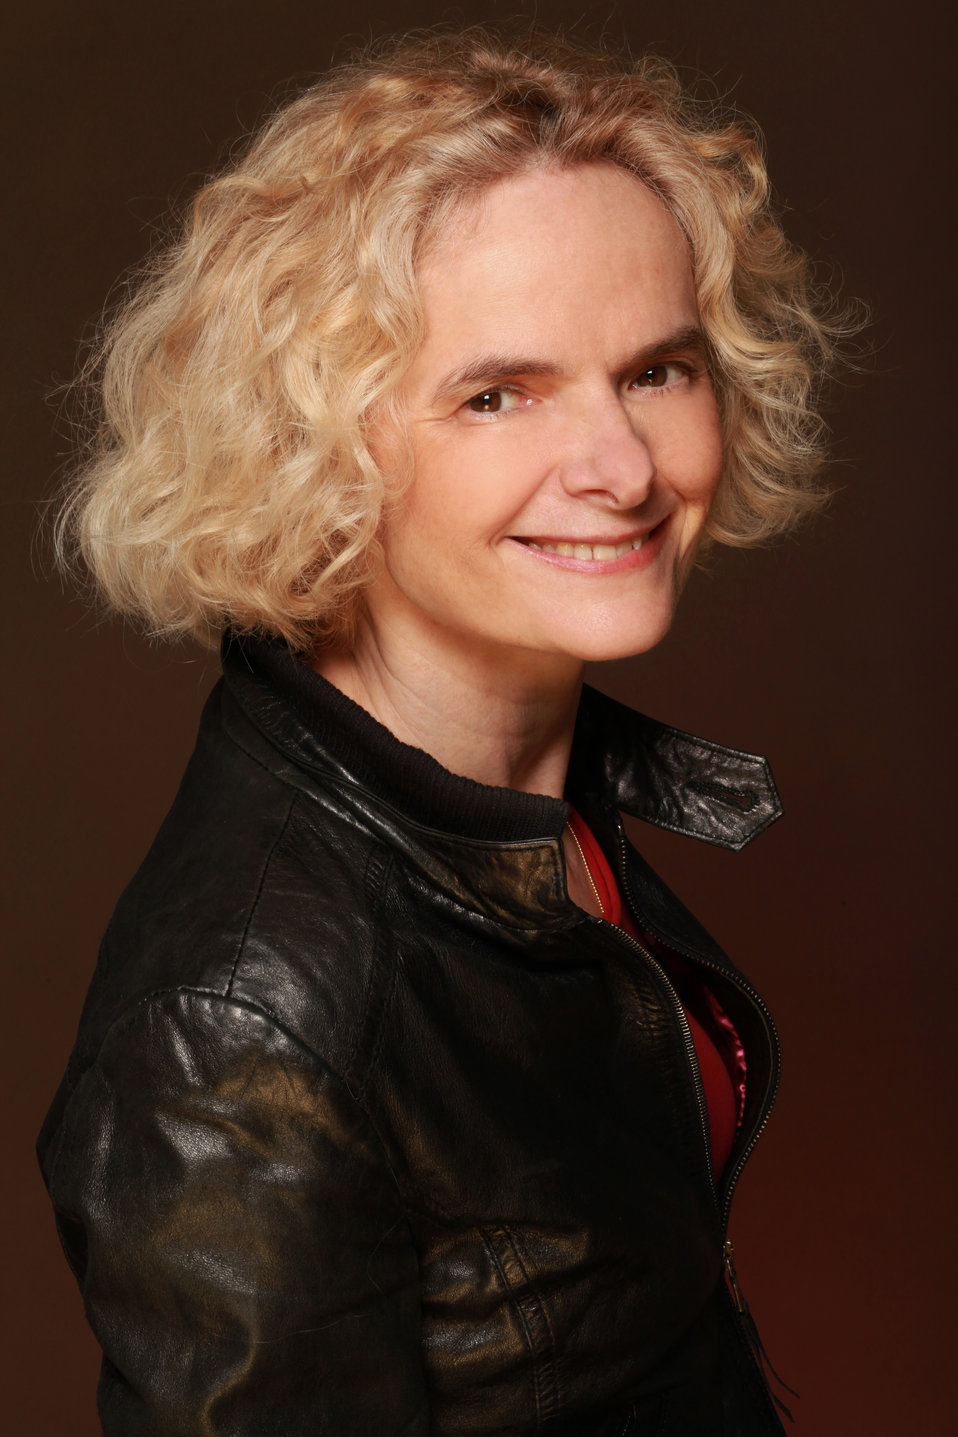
Dr. Nora Volkow, M.D., Director of the National Institute on Drug Abuse, 2013
Photo Taken By: Mary Noble Ours